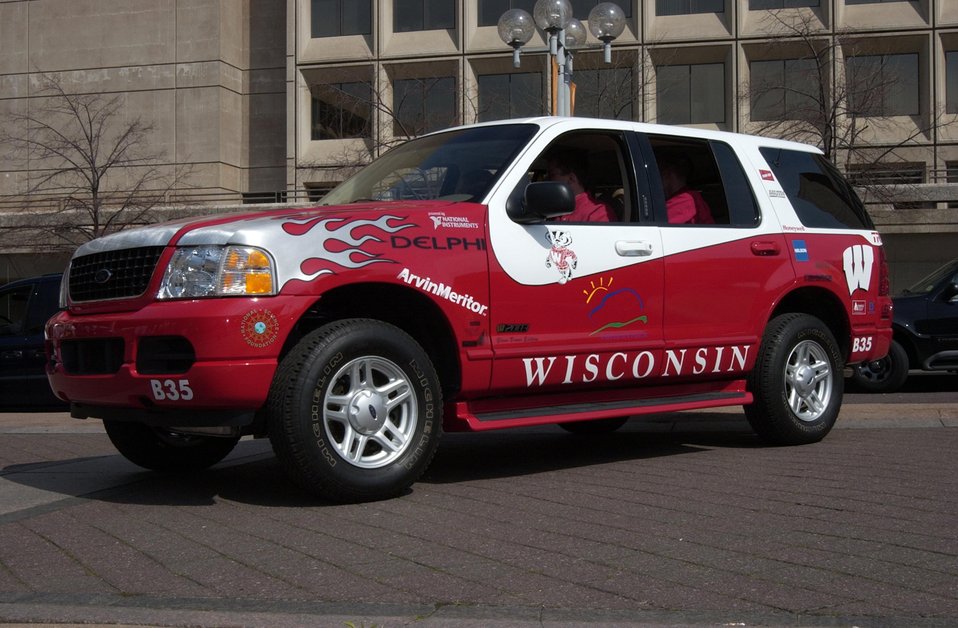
THE UNIVERSITY OF WISCONSIN RE-ENGINEERED SUV PARTICIPATING IN THE FUTURE TRUCK 2004 EVENT.

ON MARCH 24, 2004, SECRETARY OF ENERGY ABRAHAM AND THE FORD MOTOR COMPANY HOSTED SEVEN STUDENT DESIGNED ENERGY EFFICIENT SPORT UTILITY VEHICLES (SUVS) PARKED OUTSIDE OF DOE HEADQUARTERS IN WASHINGTON, DC. THE STUDENT TEAMS, PART OF THE FUTURE TRUCK 2004 ENGINEERING COMPETITION, RE-ENGINEERED FORD EXPLORERS TO ACHIEVE LOWER-EMISSIONS AND AT LEAST 25% HIGHER FUEL ECONOMY, WITHOUT SACRIFICING PERFORMANCE, UTILITY AND SAFETY. THE UNIVERSITIES THAT PARTICIPATED WERE OHIO STATE, PENN STATE, MARYLAND, TENNESSEE, WISCONSIN-MADISON, VIRGINIA TECH AND WEST VIRGINIA.